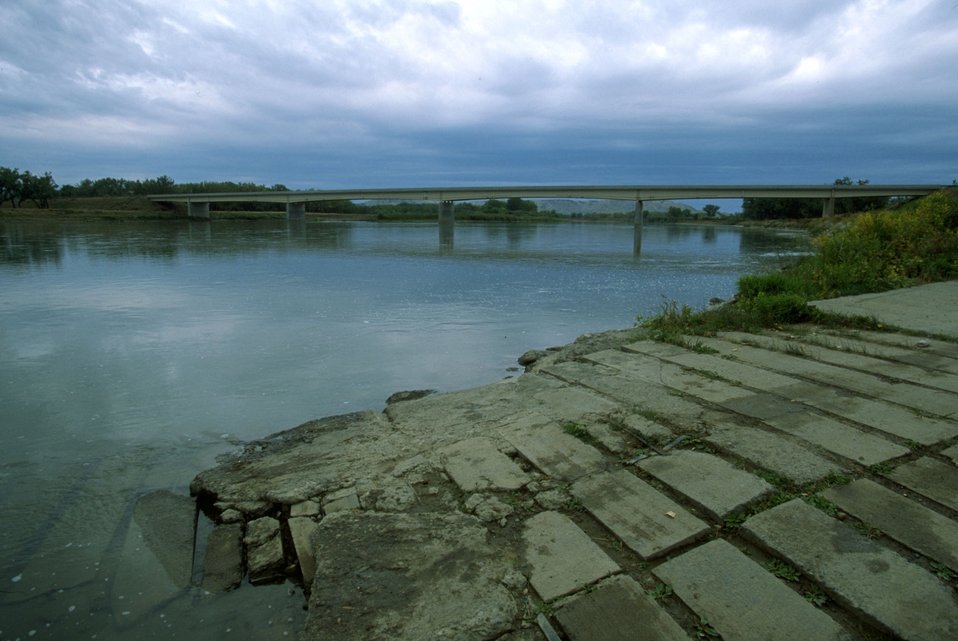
PN bridge across the Upper Missouri River north of Winifred